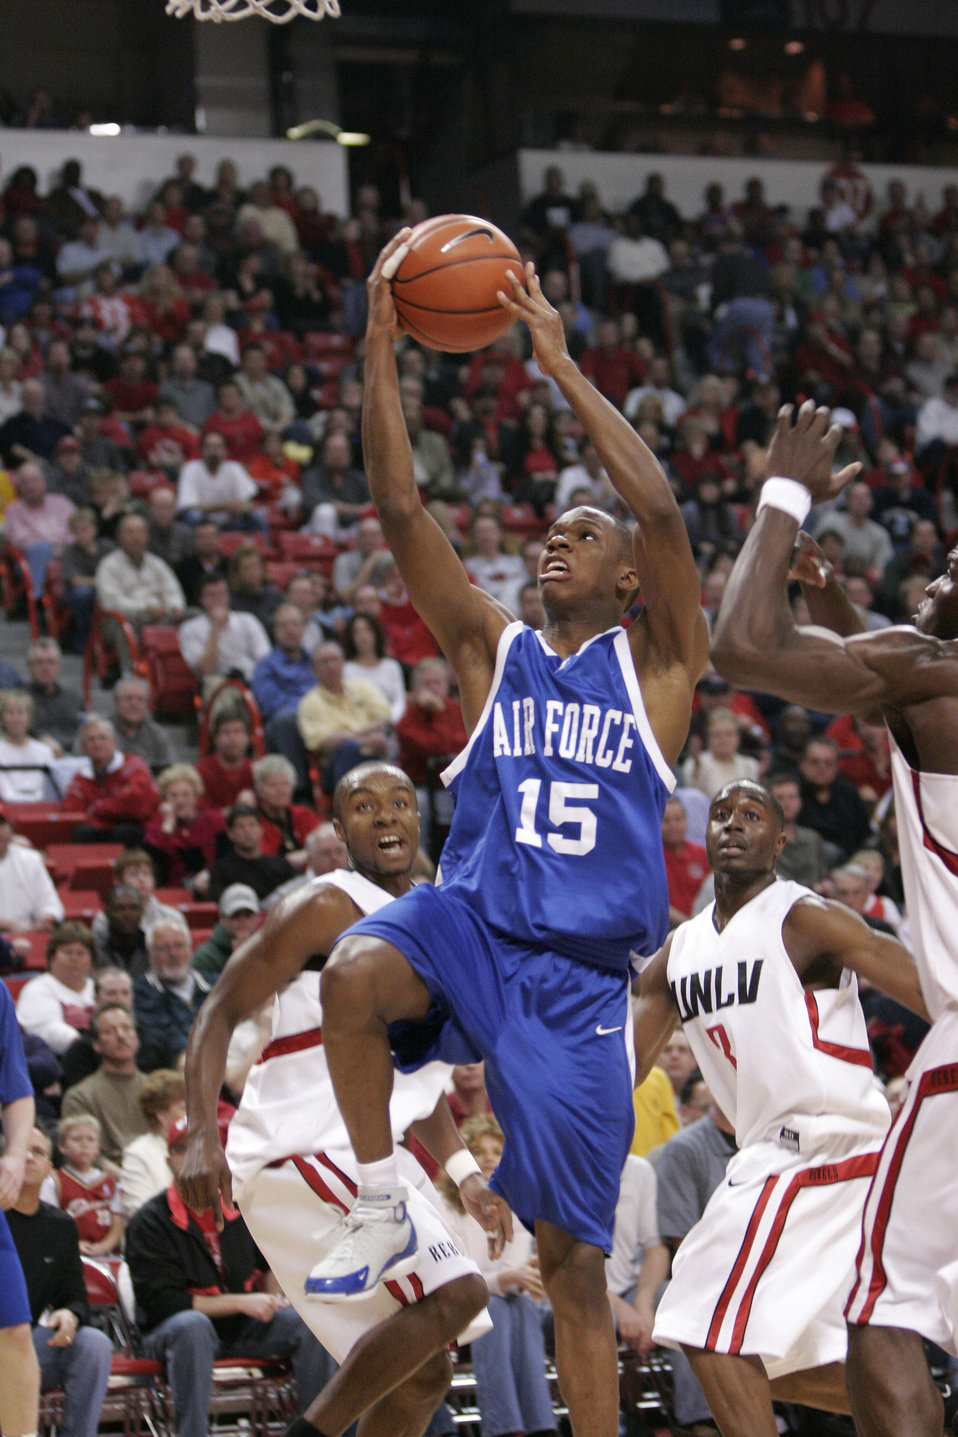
Lay it up

LAS VEGAS -- The Air Force Academy's Antoine Hood attempts a layup during a game against the University of Nevada at Las Vegas Rebels here Feb. 26. UNLV went on to win the game 63-57.